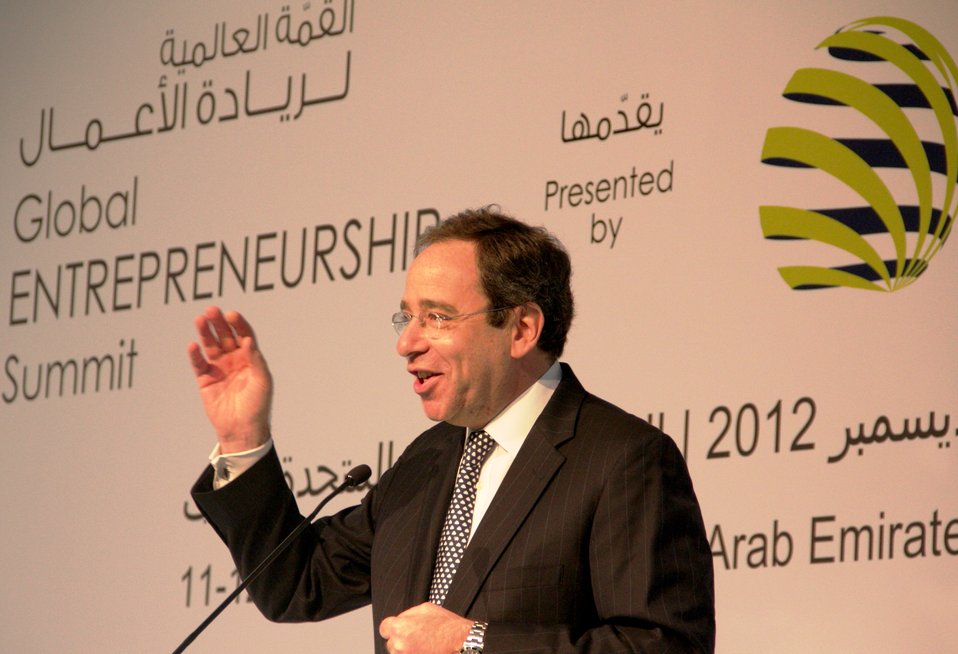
Deputy Secretary Nides Delivers Remarks at the Global Entrepreneurship Summit

Deputy Secretary of State Thomas Nides delivers remarks at the Global Entrepreneurship Summit (GES) in Dubai, United Arab Emirates, December 12, 2012.